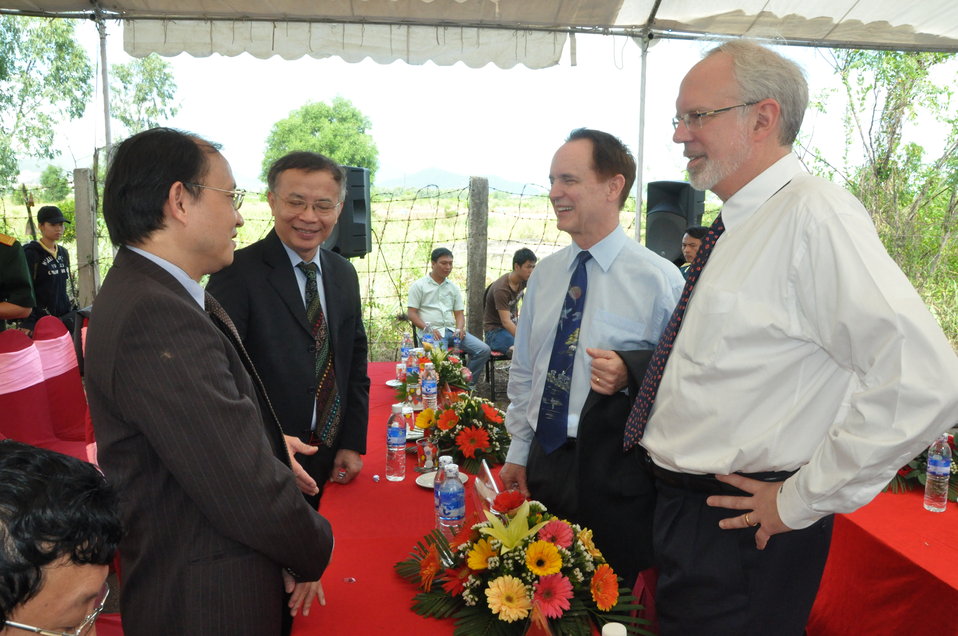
Environmental Remediation of Dioxin Contamination at Danang Airport Project Launch

Danang, August 9, 2012